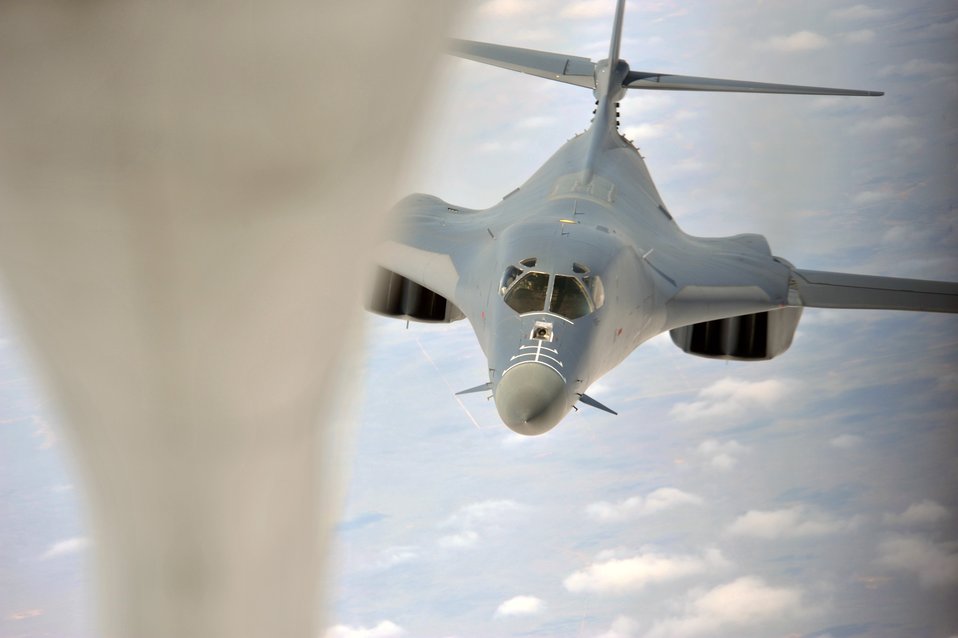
B-1 adapts, remains effective after 25 years

A B-1B Lancer prepares to receive fuel from a KC-135 Stratotanker April 21, 2010, above New Mexico. The Lancer is assigned to Dyess Air Force Base, Texas, and the Stratotanker is assigned to McConnell AFB, Kan.